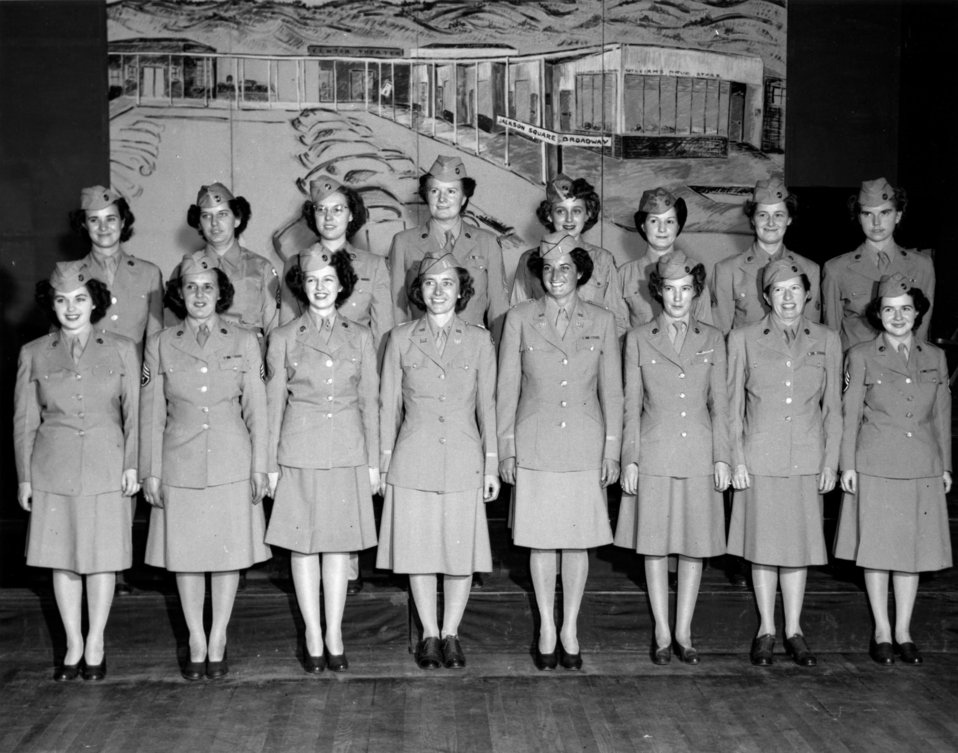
Army Activity at Oak Ridge